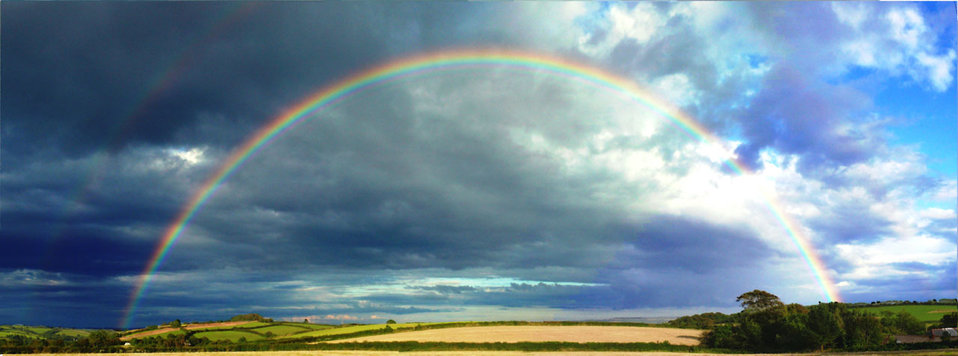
Rainbow in devon.